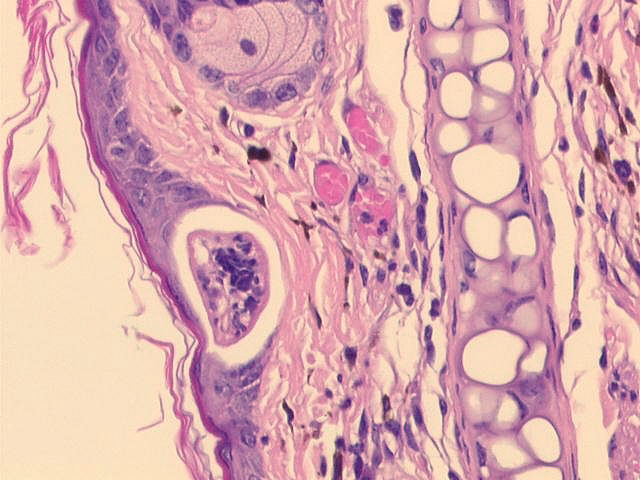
Schistosomulum in ear skin of a naive mouse.